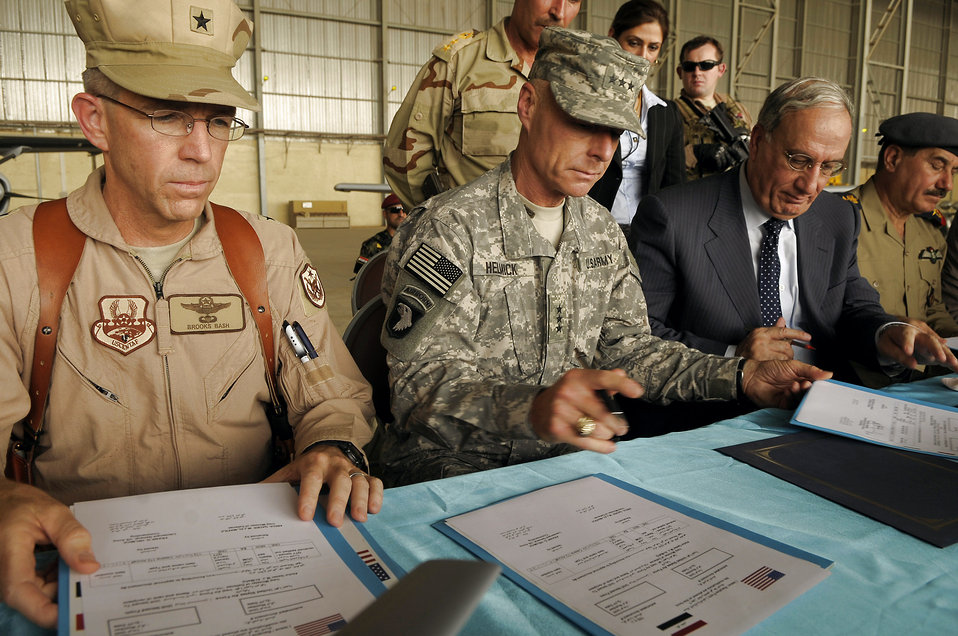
Iraqi air force acquires new aircraft from U.S. forces

Brig. Gen. Brooks L. Bash, Coalition Air Force Training Team commander, Army Lt. Gen. Frank Helmick, commander of Multi-National Security Transition Command-Iraq, Iraqi Defense Minister Abdul-Qader Mohammed Jassim, and Iraqi Air Force Chief Kamal Abdul-Sattar al-Barazanchi sign paperwork to transfer ownership of 11 U.S. Forces aircraft to the Iraqi air force at New Al Muthana Air Base, Iraq, July 9. General Helmick signed over eight Cessna 172s and three Cessna Caravan 208s worth more than $9 million to the Iraqi Defense Minister.